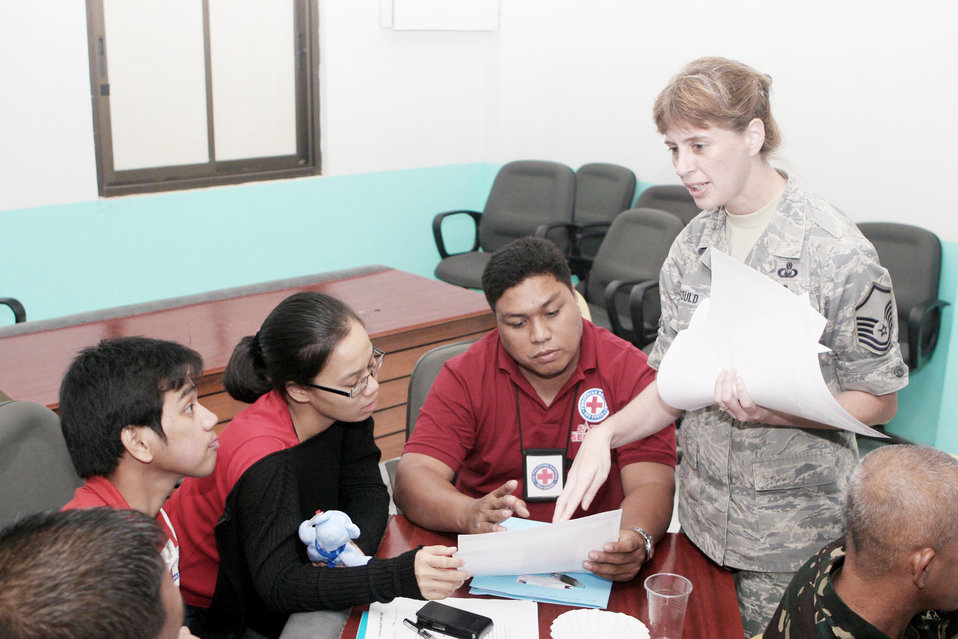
Medics teach mental health classes in Philippines

Master Sgt. Rose Gould assigned to passes out handouts during a psychological combat stress class at Camp Navarro General Hospital at Western Mindanao Command Nov. 17, 2009, in Zamboanga, Philippines. Taught jointly by the hospital psychologist and members of the Joint Special Operations Task Force-Philippines Command chaplain team, the three-day seminar focused on how to ease the psychological scars of war and effective coping strategies.